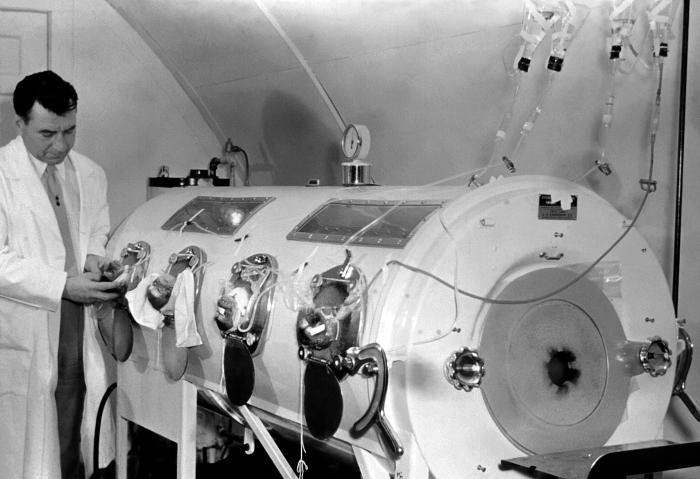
This historic photograph shows a technician calibrating an iron lung machine.